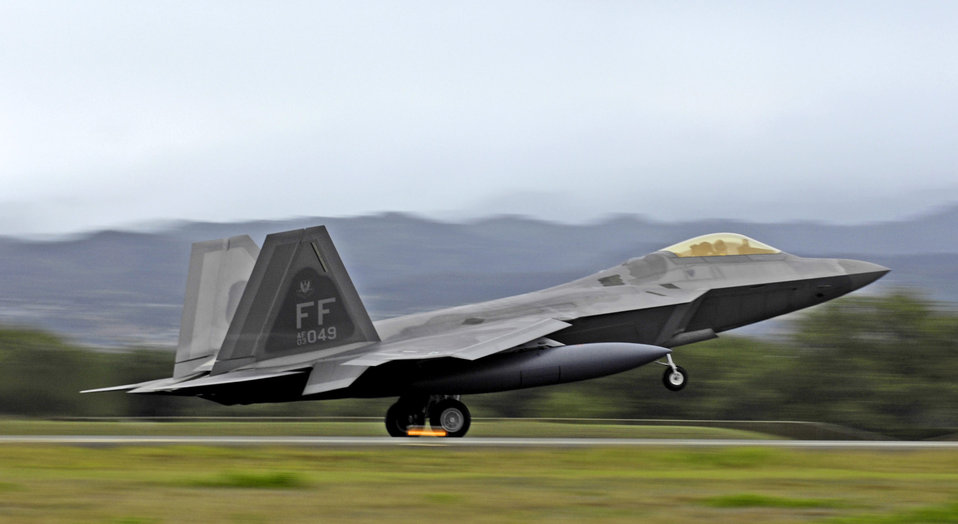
F-22 begins first overseas deployment

The first of 12 F-22 Raptors lands for a brief layover Feb. 7 at Hickam Air Force Base, Hawaii. The F-22s and more than 250 Airmen from the 27th Fighter Squadron at Langley Air Force Base, Va., are bound for Kadena Air Base, Japan, for the aircaft's first overseas operational deployment.